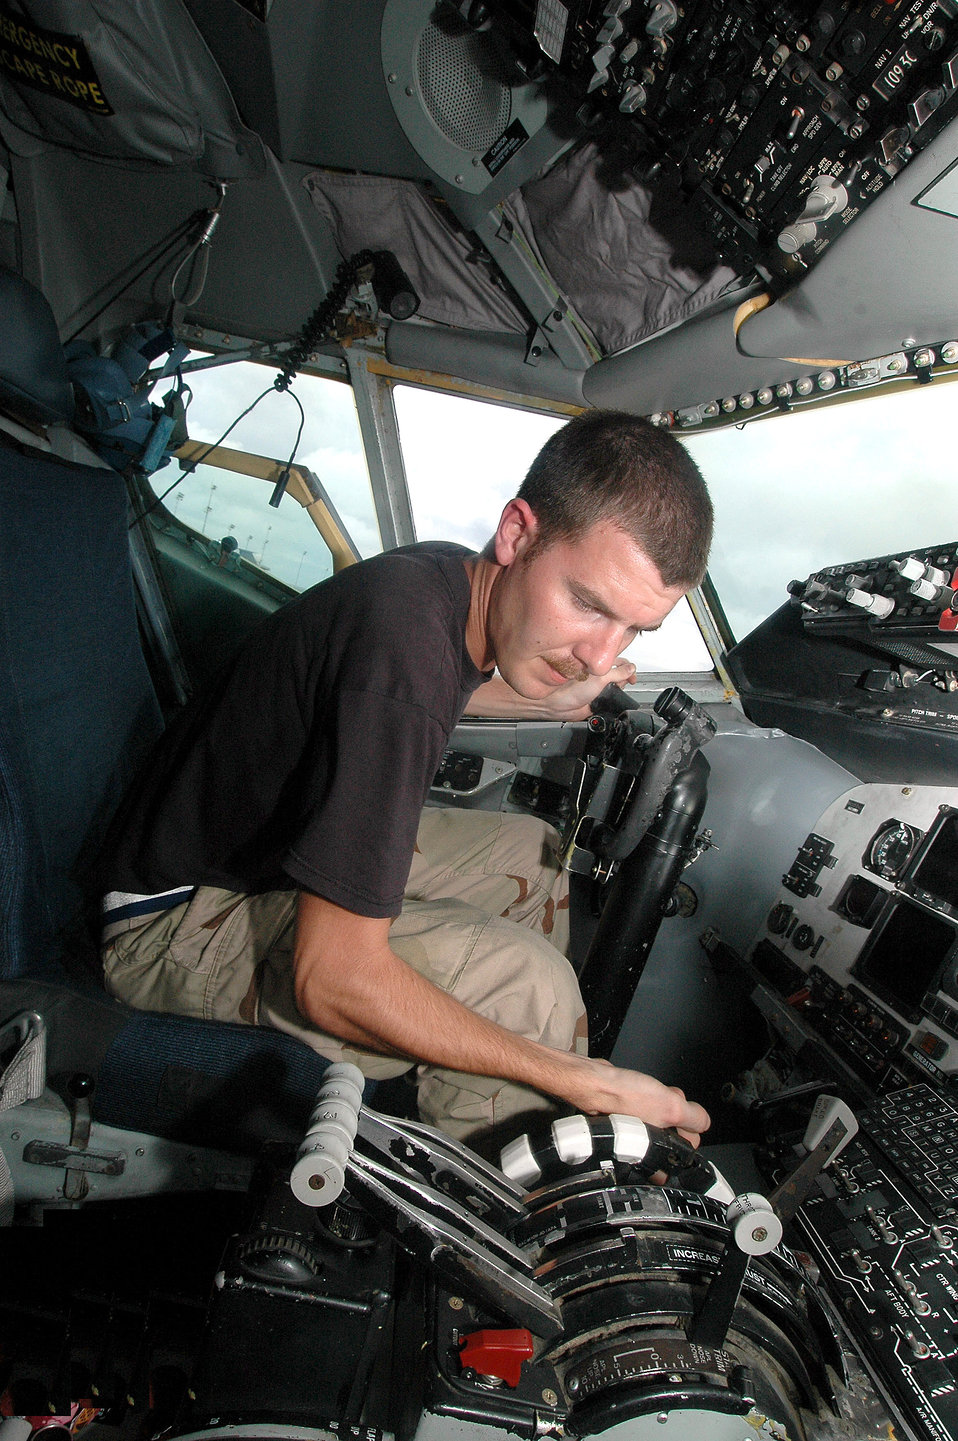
KC-135s build air bridges

Senior Airman Tyler Main coordinates the application of external power to conduct interior and exterior checks to a KC-135 that just returned from a mission. Airman Main is a crew chief with the 28th Expeditionary Air Refueling Squadron.